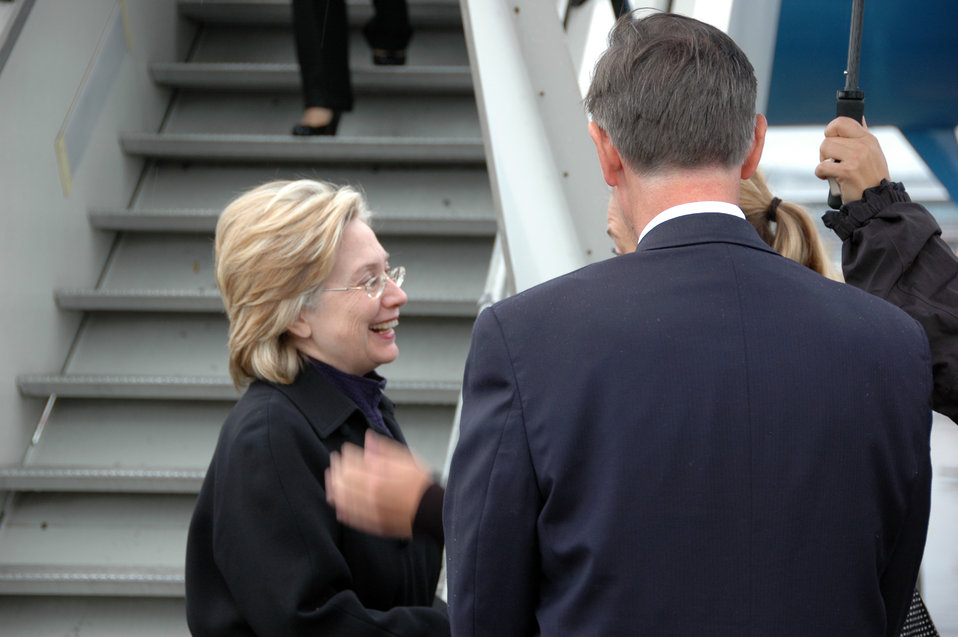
Secretary Clinton Arrives in Zurich

U.S. Secretary of State Hillary Rodham Clinton is greeted by U.S. Ambassador to Switzerland Donald S. Beyer and Ms. Alexandra Baumann (Federal Department of Foreign Affairs) during her arrival in Zurich, Switzerland October 9, 2009.